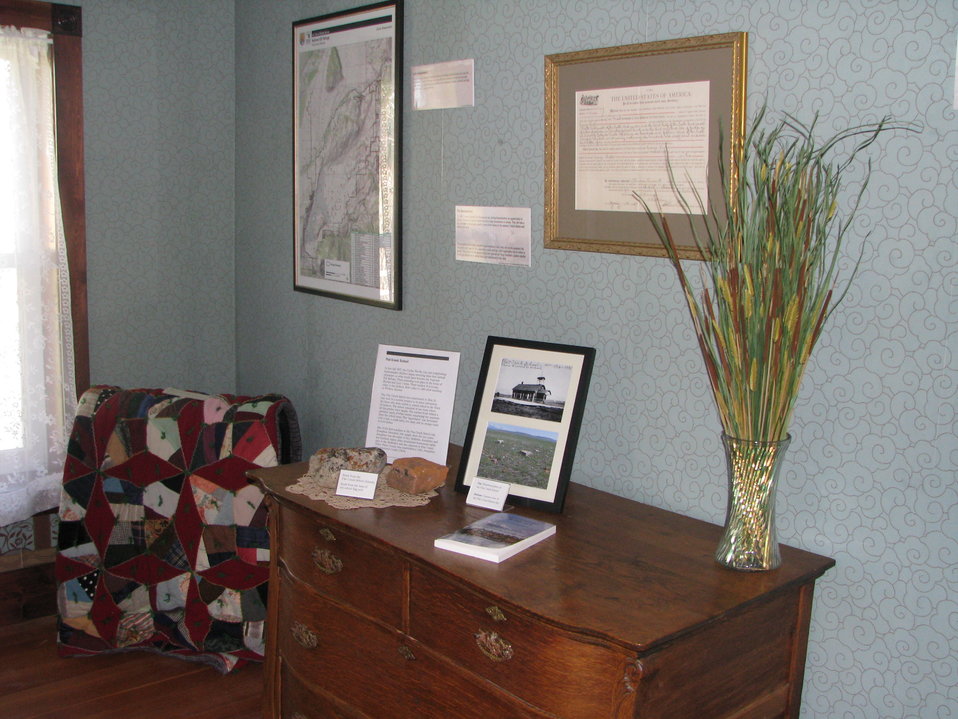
Displays on Homesteading

One room in the historic Miller House focuses exclusively on early settlers, including a map of some of the refuge's original homesteads, a homestead patent, and photos and text describing the Flat Creek School that once sat on refuge land.